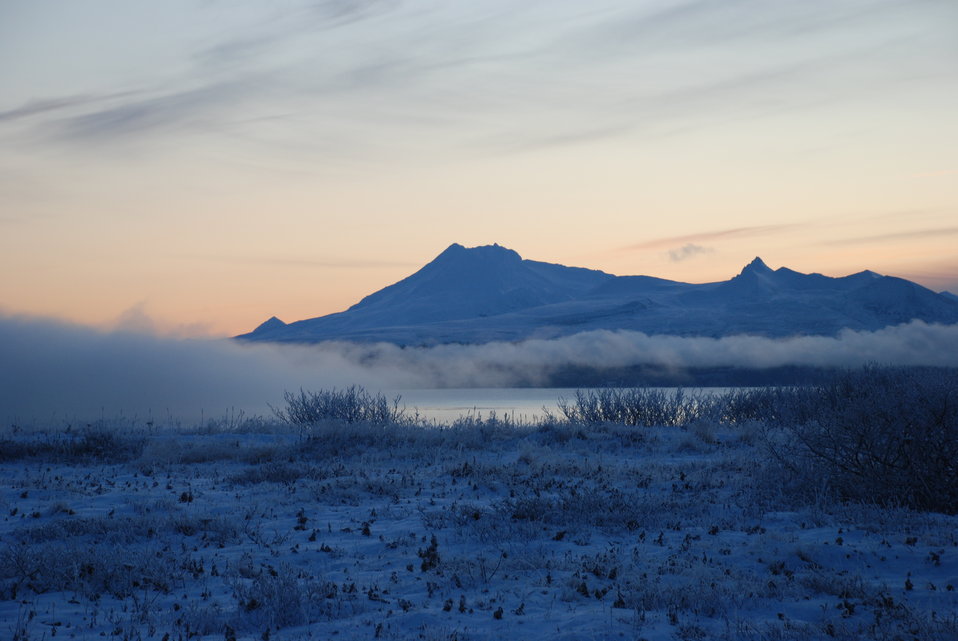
Fog frames Mt Dutton

Izembek National Wildlife Refuge